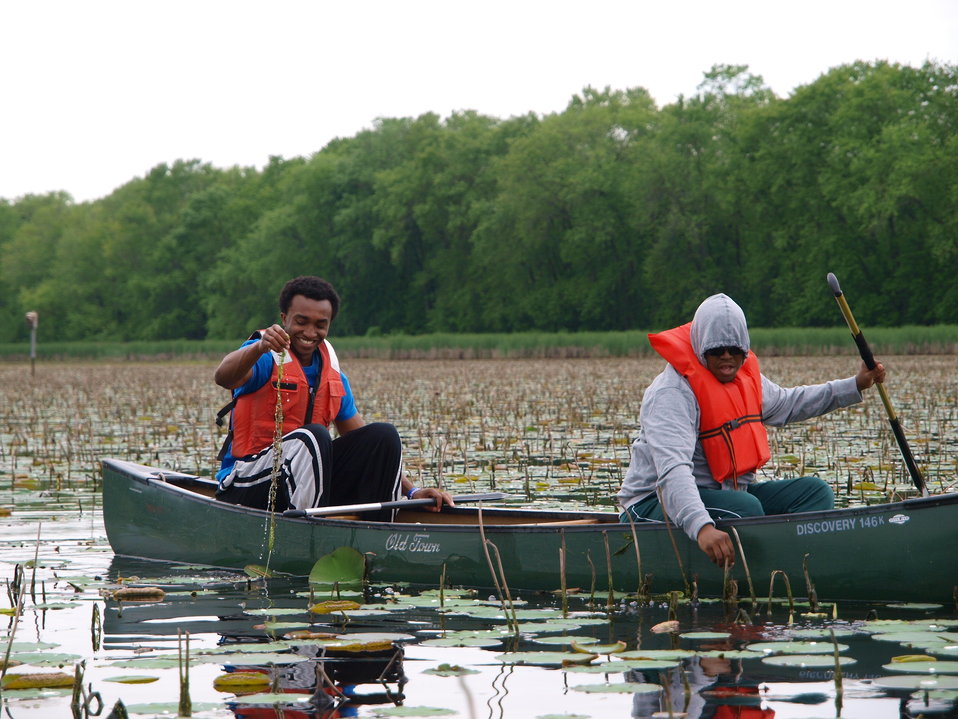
Waterchestnuts

Ocie and John pick waterchestnuts during the Biology unit.